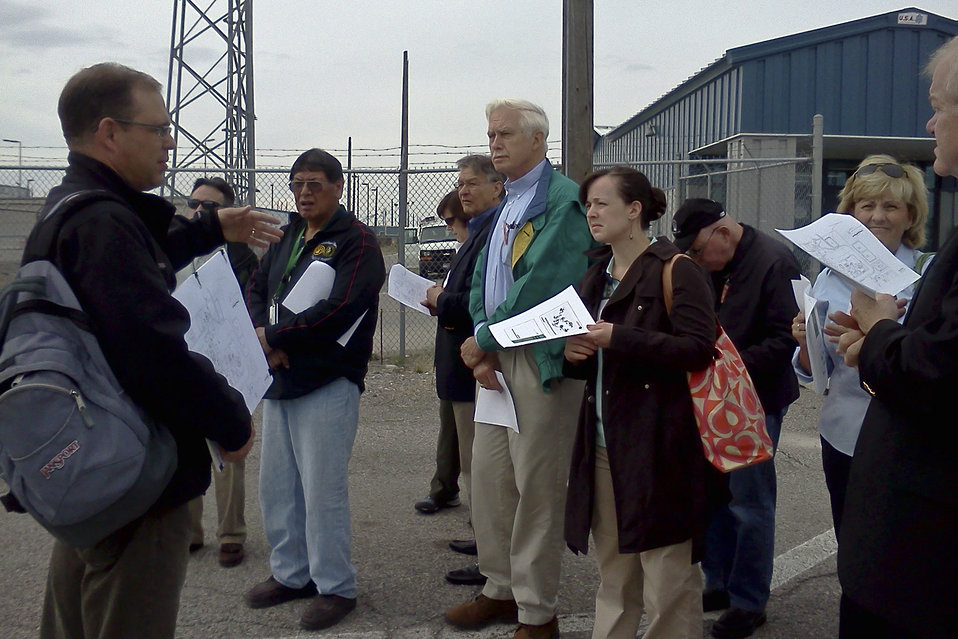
EMAB on Idaho visit

EMAB (Environmental Management Advisory Board) members arrive at the Idaho Nuclear Technology and Engineering Center to view decontamination and demolition progress, remote-handled TRU waste repackaging efforts, progress of the Integrated Waste Treatment Unit prior to sodium-bearing waste treatment, and other cleanup progress at the 1950s spent nuclear fuel reprocessing facility.